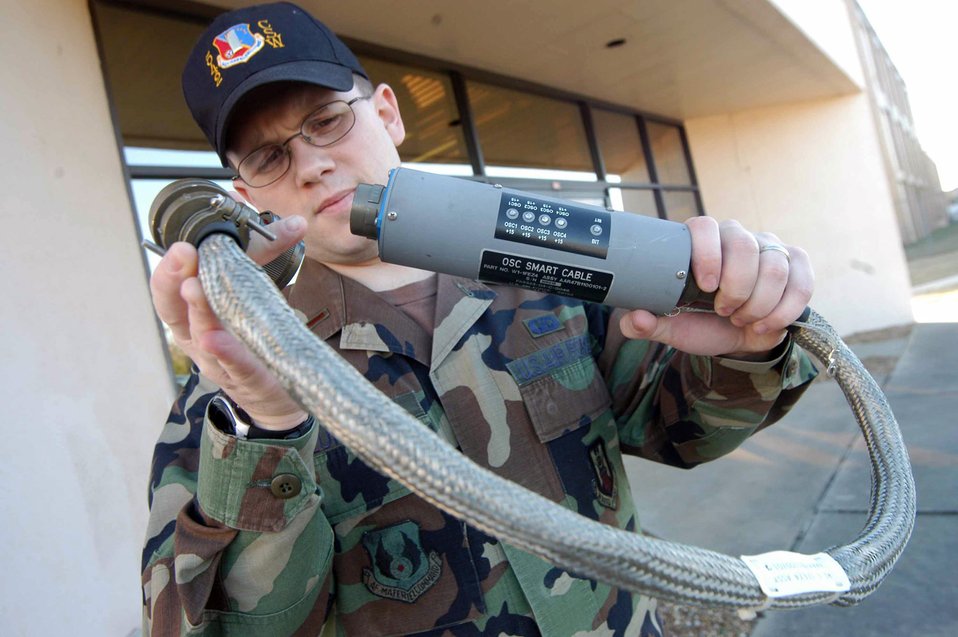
Smart cable

ROBINS AIR FORCE BASE, Ga. -- Second Lt. Chris Lundell holds a Smart Cable. He is an AAR-47 engineer.